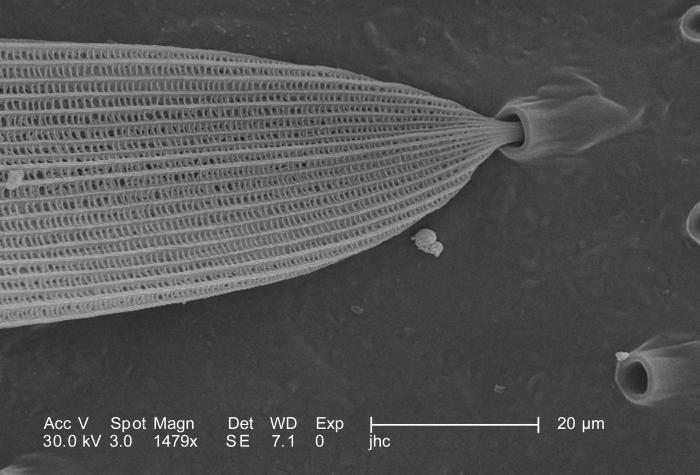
In this relatively highly magnified scanning electron micrographic (SEM) view, some of the wondrous ultrastructural shapes found on the surface of an unidentified white moth were revealed. This moth, discovered deceased in the Decatur, Georgia suburbs, was a member of the Phylum Arthropoda, Order Lepidoptera. At this level of magnification, 1479X, the proximal strut of a single scale could be seen as it inserted into its exoskeletal pore. Imagery such as this brings to life the incredible beauty, which goes unseen, but is abundant all around us. For another view of this region, at a much higher magnification, see PHIL 9841.